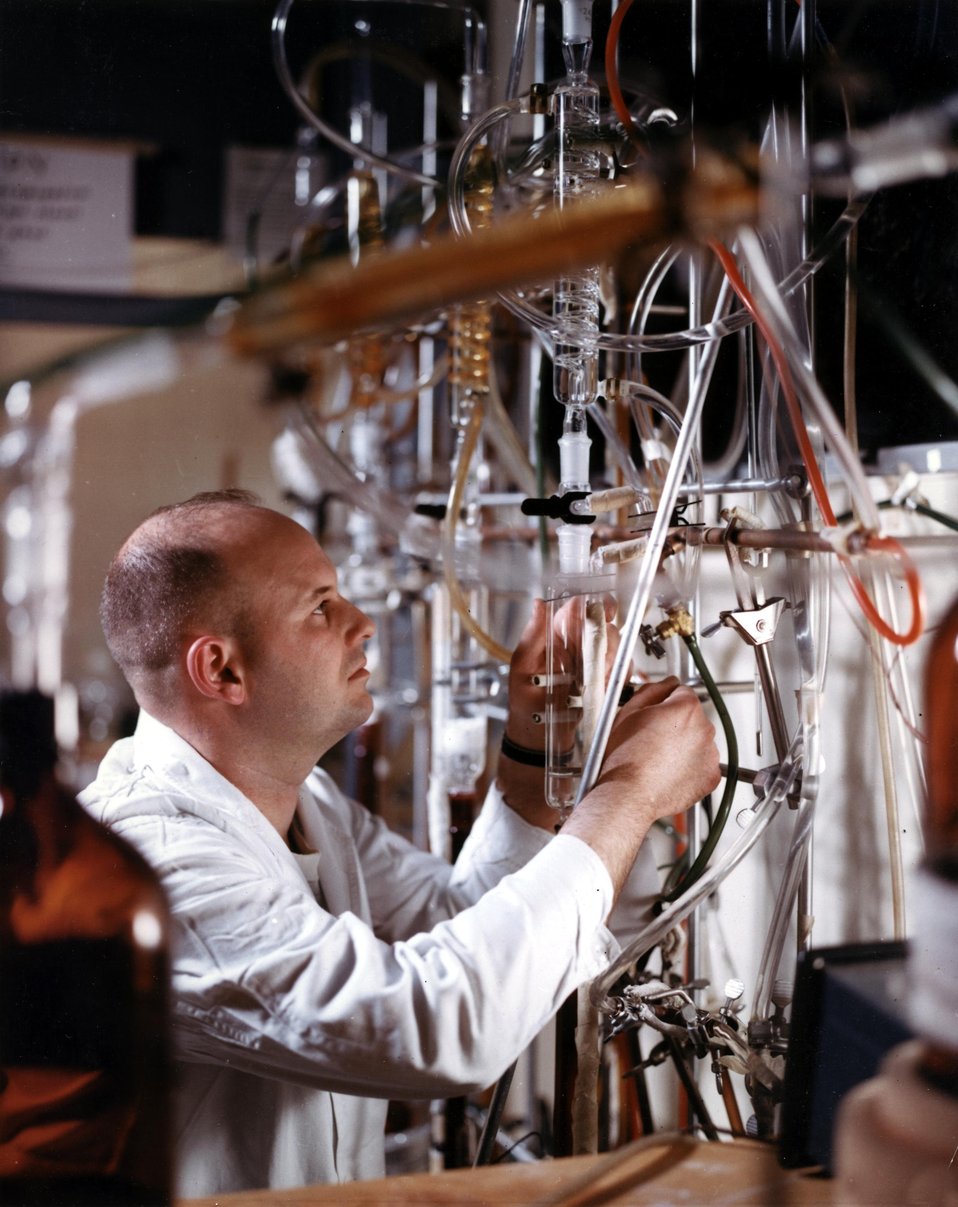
Chromatography is one of the many steps in the purification process. A volatile liquid
is boiled in a lower flask and the vapor condensed above the material being purified.